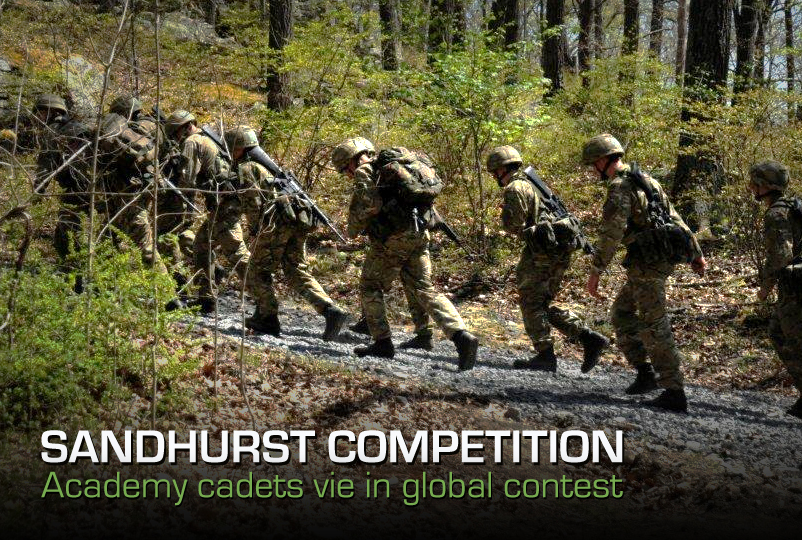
Sandhurst Competition